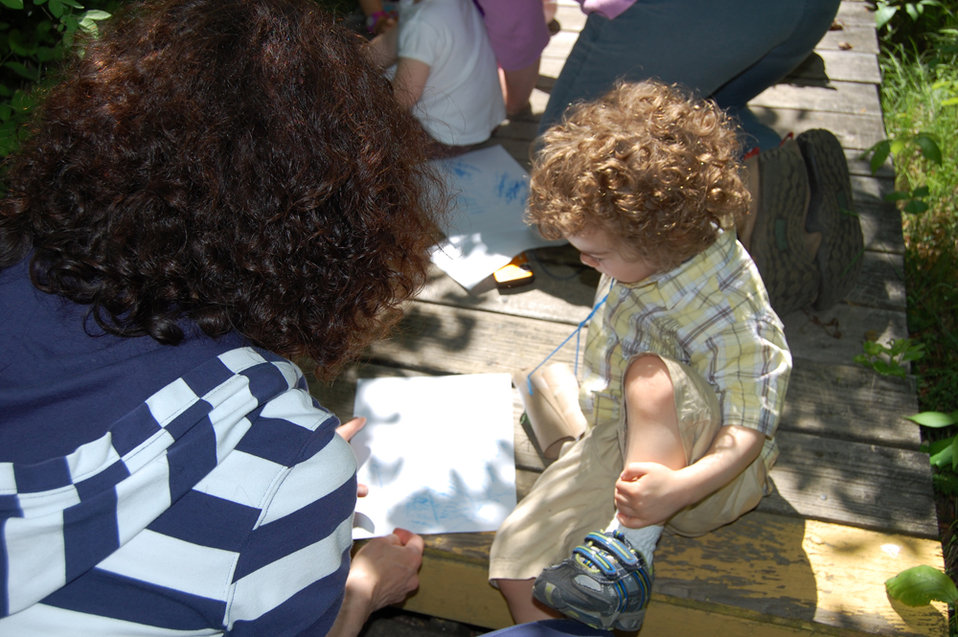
Sense of Wonder Camp

Sring 2009 session of the Sense of Wonder Camp, a camp for children ages 3-4 at Parker River National Wildlife Refuge.Credit: Kate Toniolo/USFWS